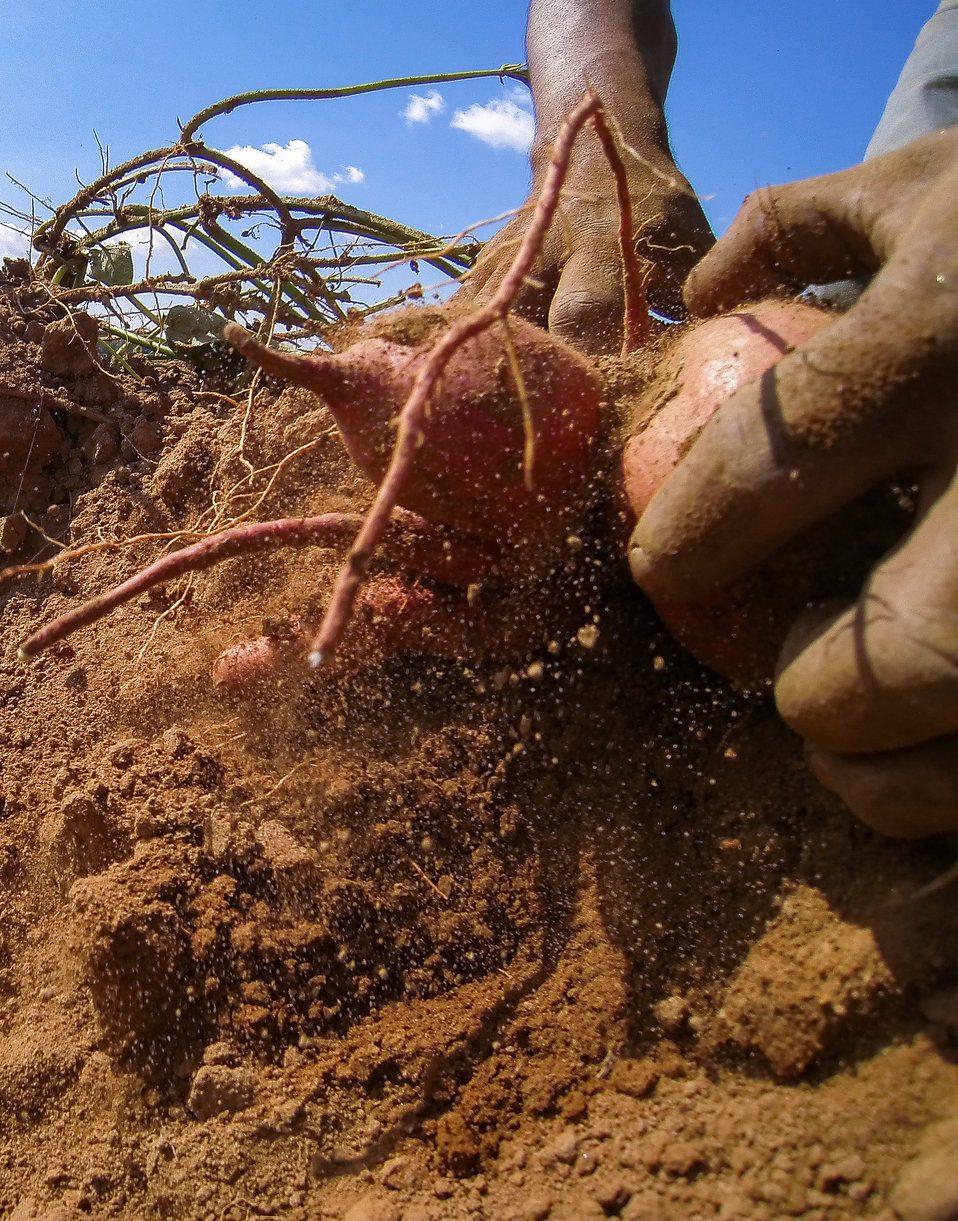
Migrant workers pick, separate, and process sweet potatoes at Kirby Farms in Mechanicsville, VA on Friday, Sept. 20, 2013. 200 acres of the farm are devoted to eggplant, spinach, beets, tomato, jalapeno peppers, melons and a variety of greens. Soybeans and small grain are grown on the remaining 300 acres. Using rotational crop practices allows Kirby Farms to double and triple crop yields. Wholesalers, who buy from this farm, sell the produce to major supermarkets in the Mid-Atlantic region, from North Carolina to Maryland. Restaurants in the local area prepare and serve the local bought produce to patrons in the Richmond, VA metropolitan area.